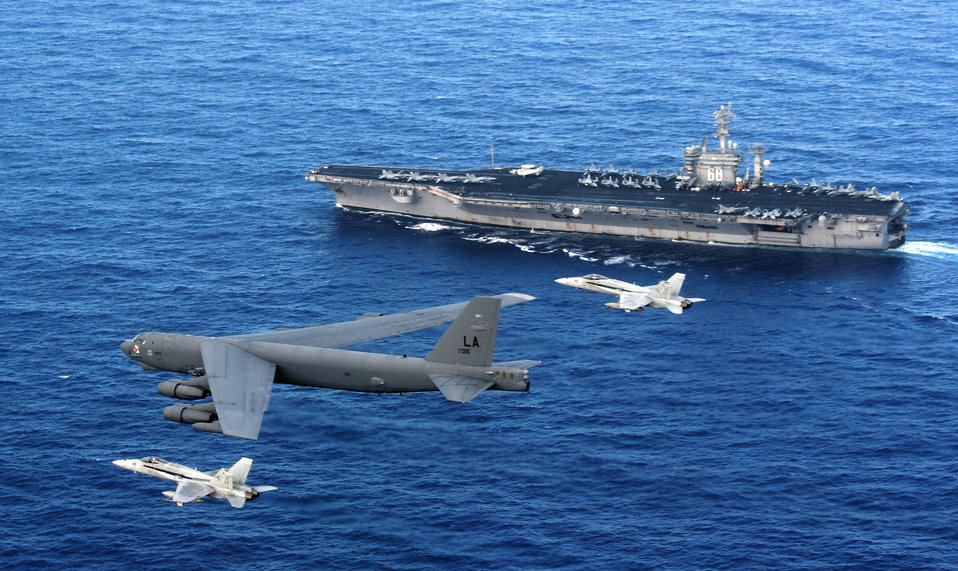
It's an adventure

A B-52 Stratofortress flies past the USS Nimitz as two U.S. Navy F/A-18 Hornets intercept. The B-52 is from the 96th Expeditionary Bomb Squadron deployed to Andersen Air Force Base, Guam.